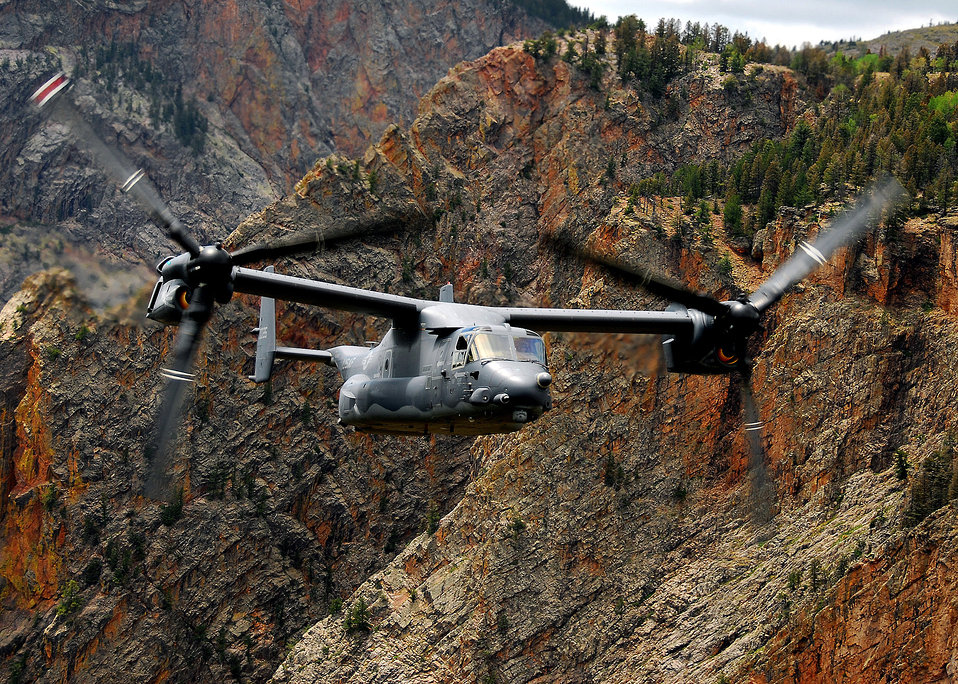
Out for a spin

A television news crew from Albuquerque takes a ride on a CV-22 Osprey Aug. 7 and finds themselves in the midst of aerial scenery that is breathtaking, as is the angle of flight during part of the ride.